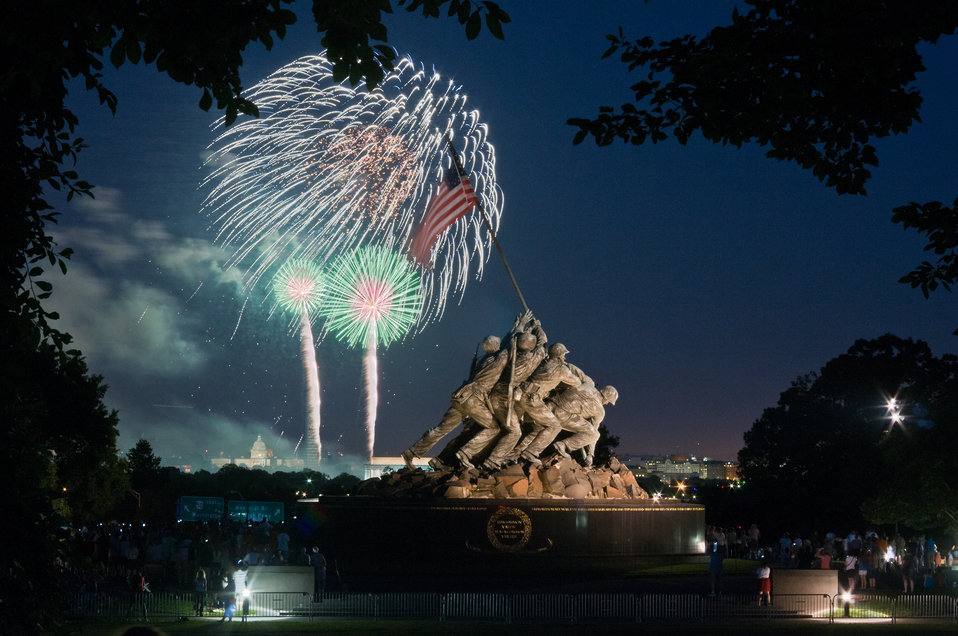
Independence Day celebration fireworks are seen from the Iwo Jima, U.S. Marine Corps Memorial in Arlington, VA on Jul. 4, 2013. In the distance are the Lincoln Memorial, the U.S. Department of Agriculture (USDA) Yates Building (dark red brick building), the Washington Monument (with scaffolding), and the U.S. Capitol building in Washington, D.C.